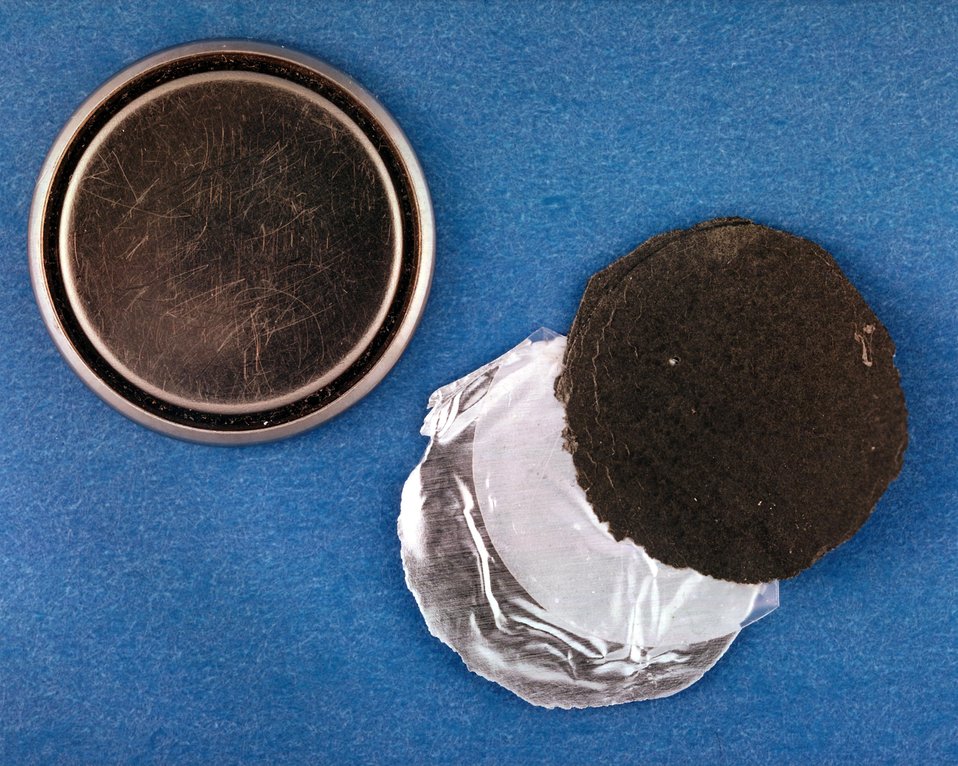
LAWRENCE BERKELEY LABORATORY'S NEW CLASS OF SOLID-STATE BATTERY IS ENERGIZED BY A THREE-LAYERED SANDWICH OF MATERIALS (LEFT).

THE DARK TOP LAYER IS A DISULFIDE POLYMER. ACTING AS THE POSITIVE ELECTRODE, THIS CLASS OF MATERIALS HAS NEVER BEFORE BEEN USED AS A BATTERY ELECTRODE. THE MIDDLE LAYER IS THE SEPARATOR, COMPOSED OF POLYETHYLENE OXIDE. THE SHINY BOTTOM LAYER IS LITHIUM. THESE MATERIALS CAN BE FABRICATED INTO COIN CELLS SUCH AS THE PROTOTYPE BATTERY AT RIGHT, OR MUCH LARGER AND MORE POWERFUL BATTERY SIZES FOR VARIED APPLICATIONS.